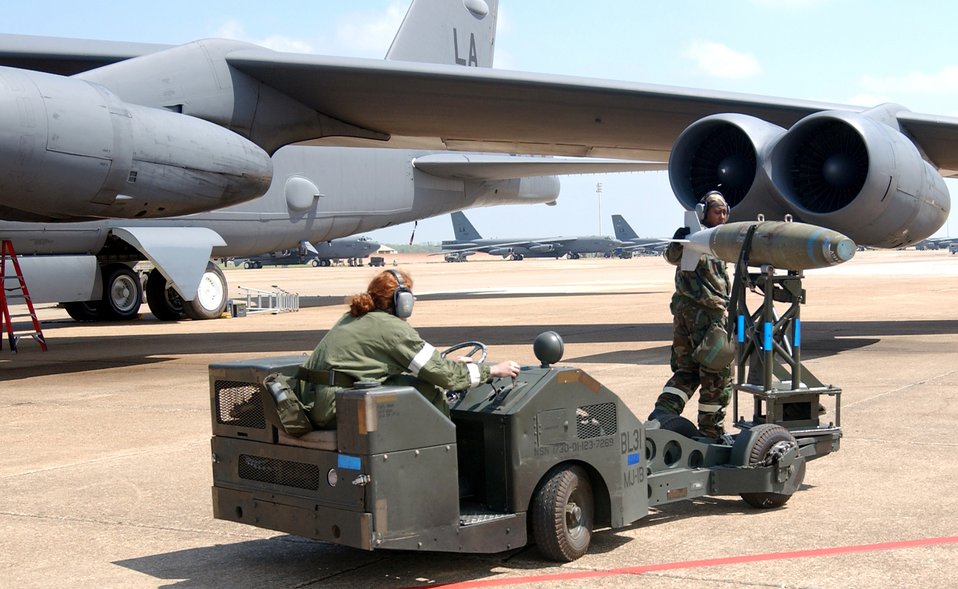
Conventional delivery

BARKSDALE AIR FORCE BASE, La. -- Two weapons loaders download a bomb from a B-52 Stratofortress during a conventional operational readiness exercise April 7. The exercise test of the wing's warfighting capability. The weapons loaders are with the 2nd Munitions Squadron.